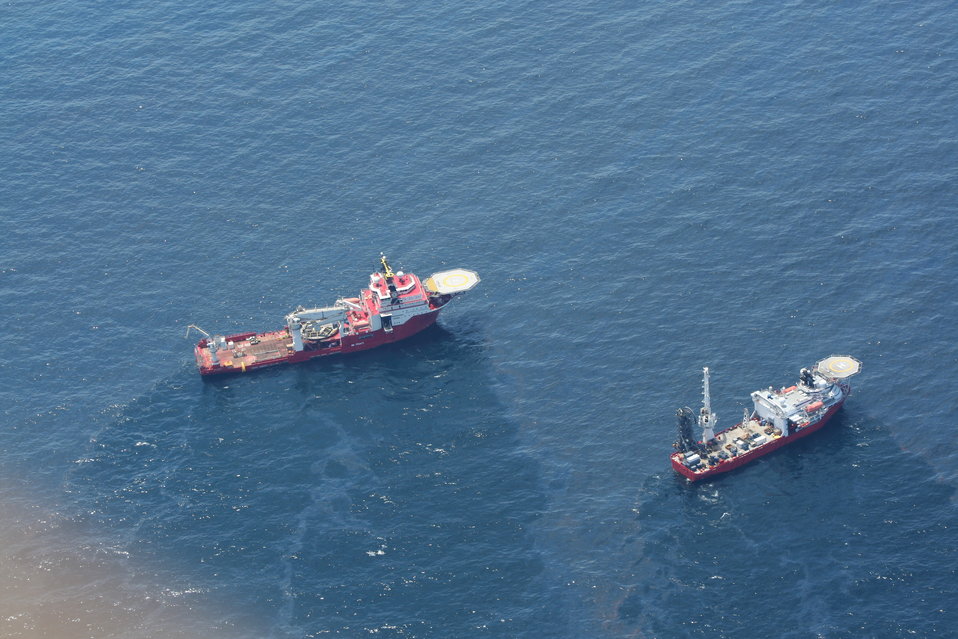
Gulf of Mexico Oil Spill (82)